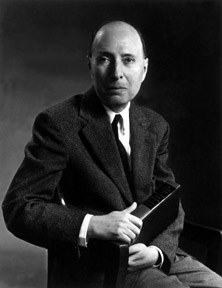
Eugene Wigner.